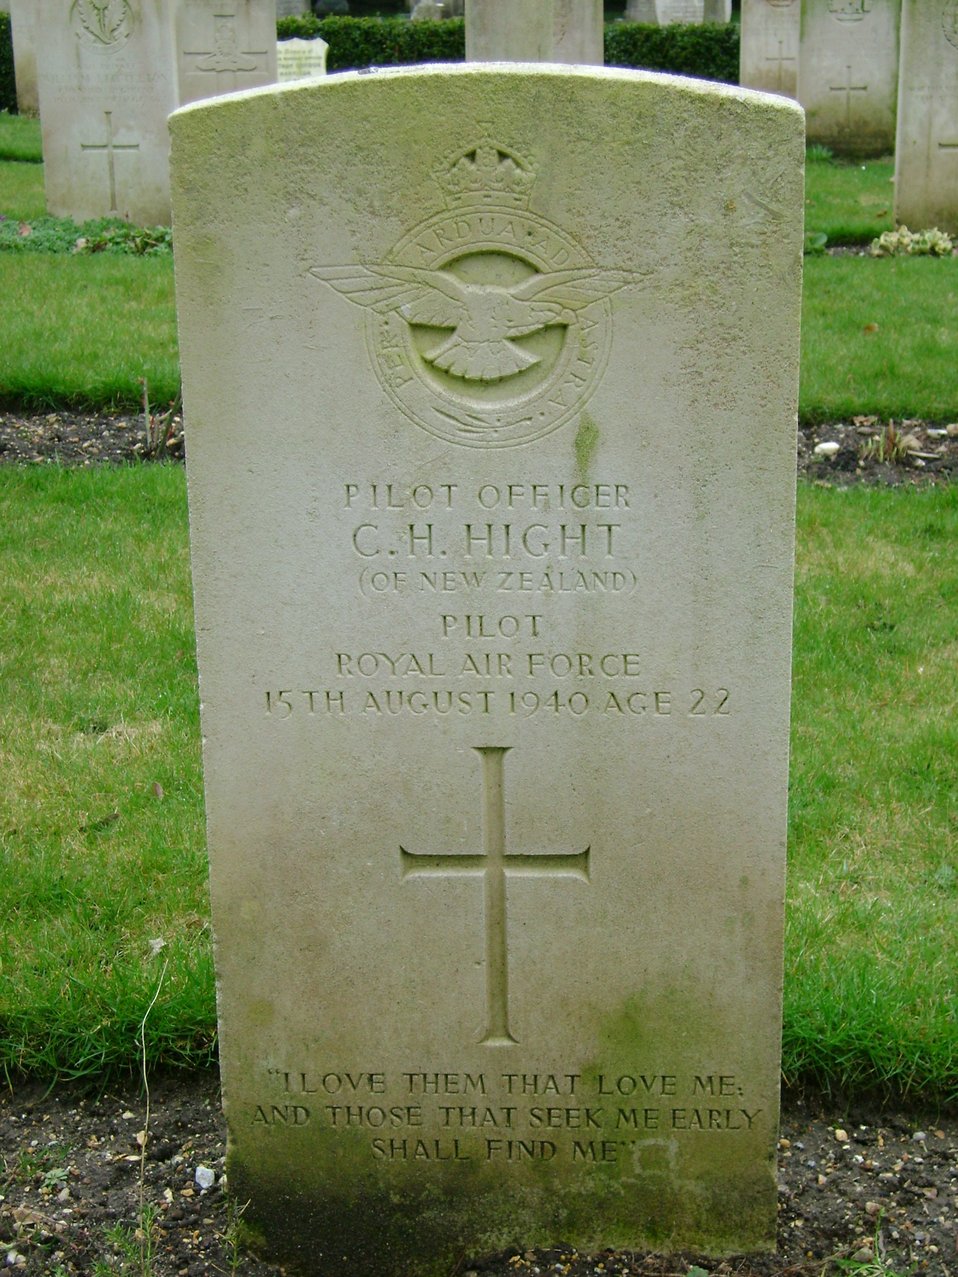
Cecil Hight's headstone, Bournemouth East Cemetery